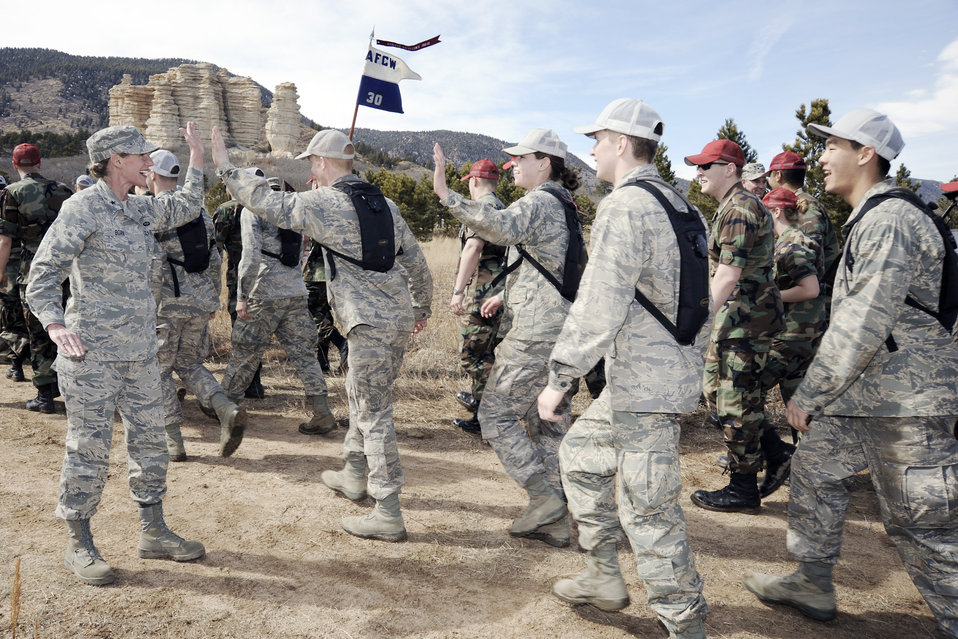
Academy freshmen attain status

Dean of the Faculty Brig. Gen. Dana Born encourages the Class of 2013 during the final leg of